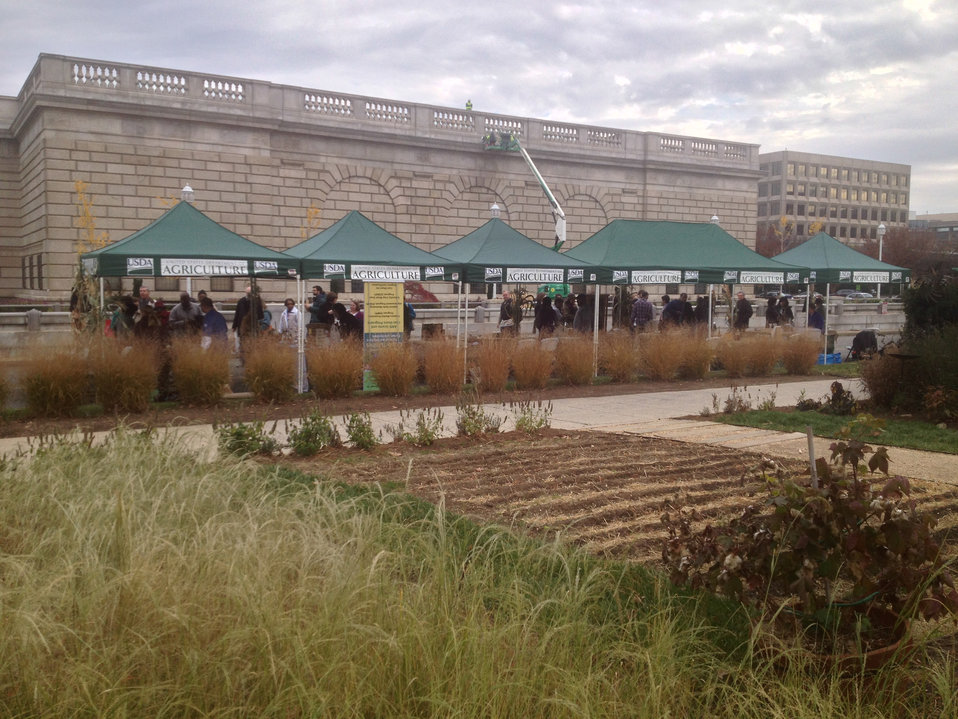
The U.S. Department of Agriculture (USDA) final outdoor market and Harvest Festival at the USDA Whitten Building east parking lot in Washington, D.C., on Friday, November 22, 2013.